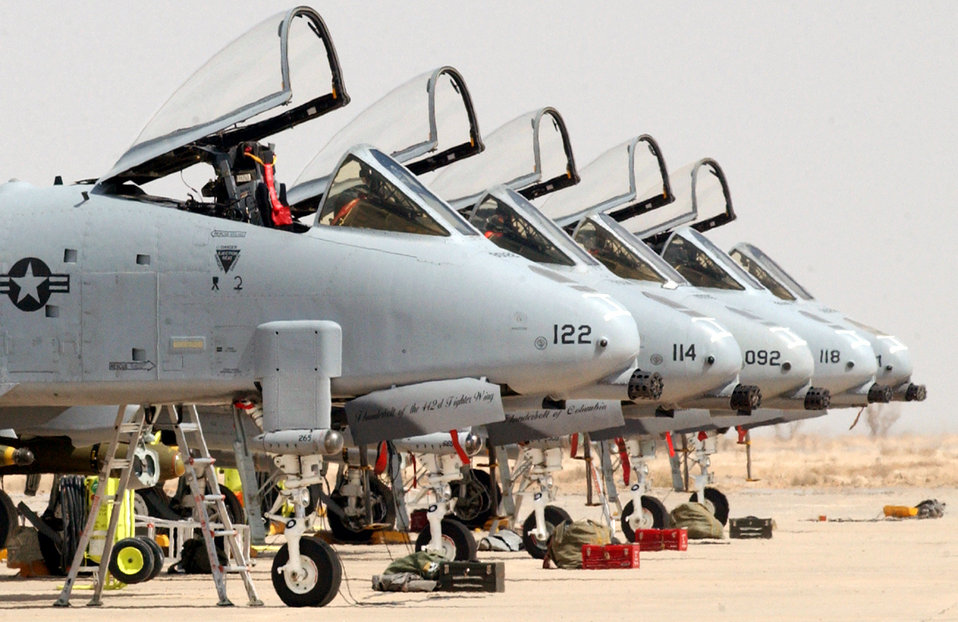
Warthog row

OPERATION IRAQI FREEDOM -- A-10 Thunderbolt IIs ares lined up on the flightline of Tallil Air Base in southern Iraq awaiting pilots. The aircraft are part of the 442nd Fighter Wing from Whiteman Air Force Base, Mo., which is deployed to Tallil.